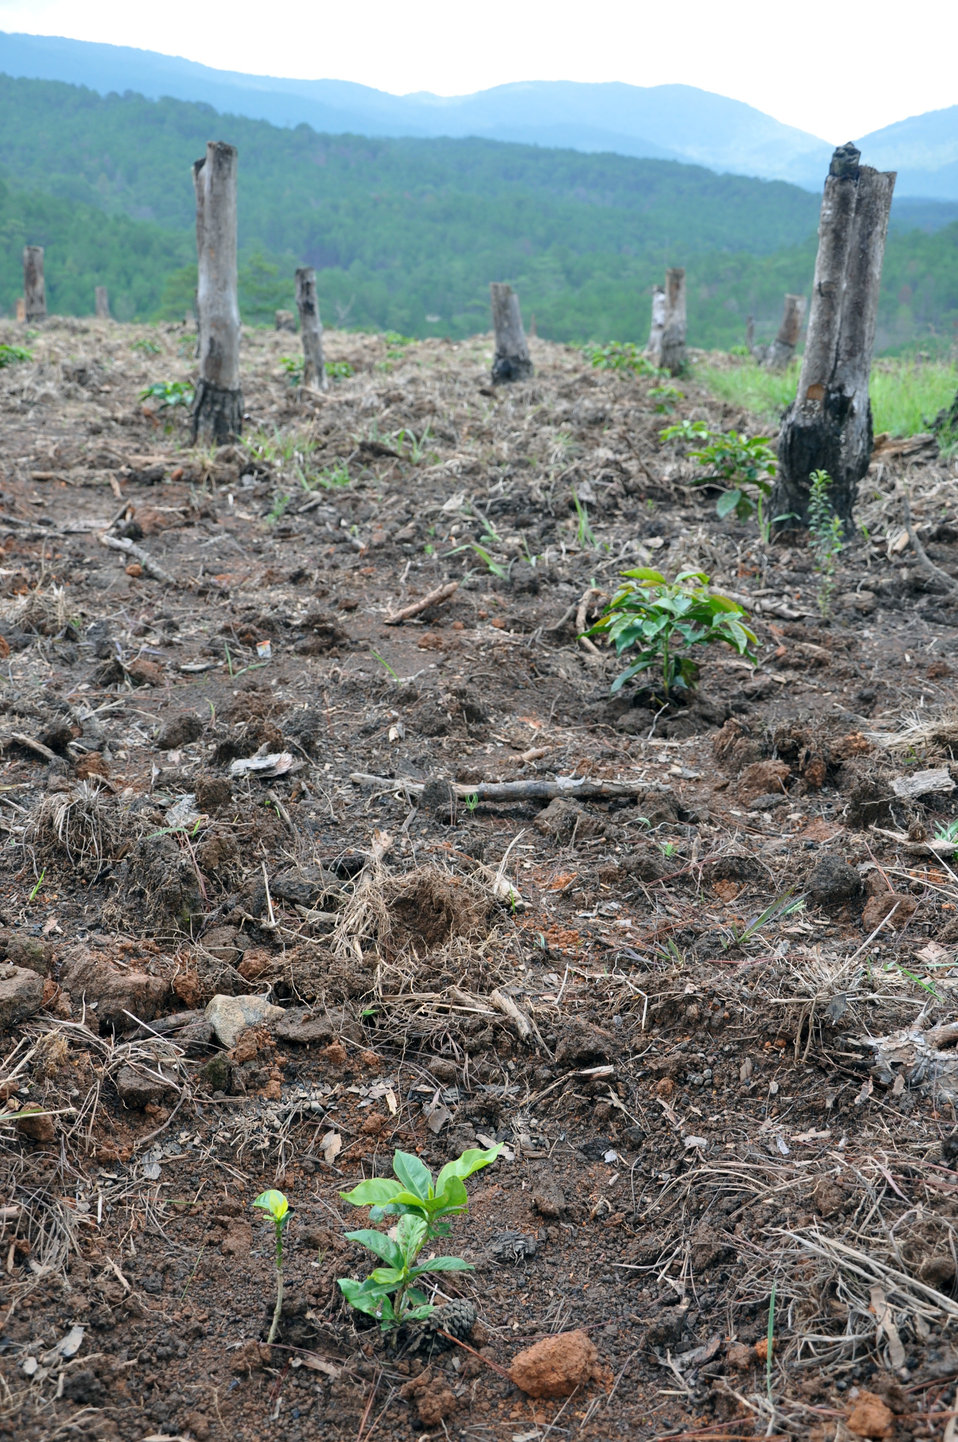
Forest in Vietnam